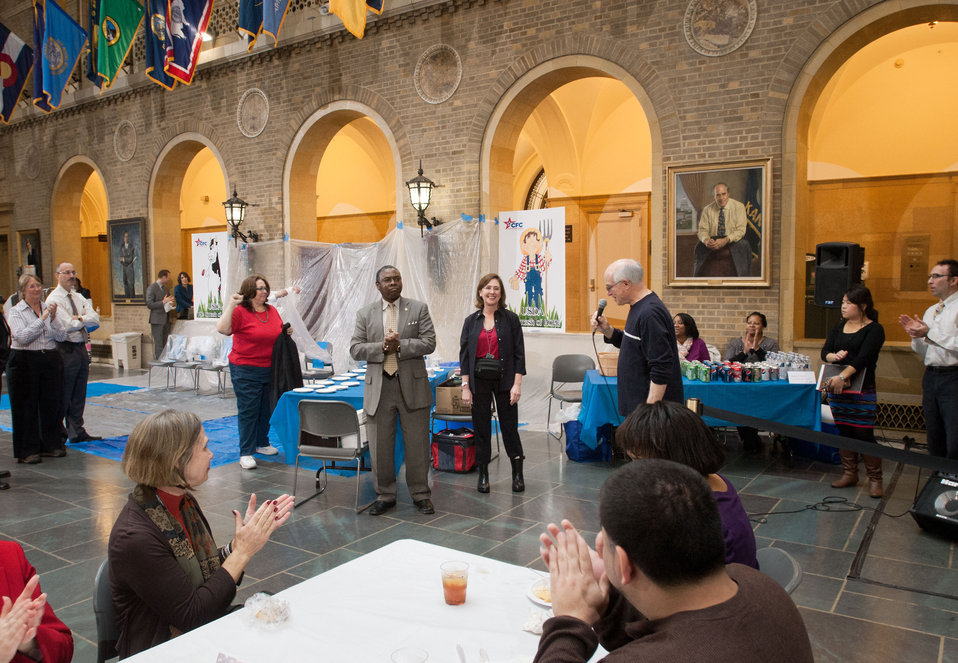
Combined Federal Campaign (CFC) fundraiser at the U.S. Department of Agriculture (USDA) headquarters, on Monday Dec. 3, 2012, in Washington, D.C. The event featured a 'Pie Smash” event where attendees, on personal time, donate money to throw non-dairy whipped 'cream' pies at Agriculture leadership. Other fund raising activities at this event included a silent auction, candy packets, bake sale, and pulled-pork sandwich lunches for donations. Additionally, information tables for Red Cross and Canine Partners for Life provided people with answers about the organizations and how to participate.